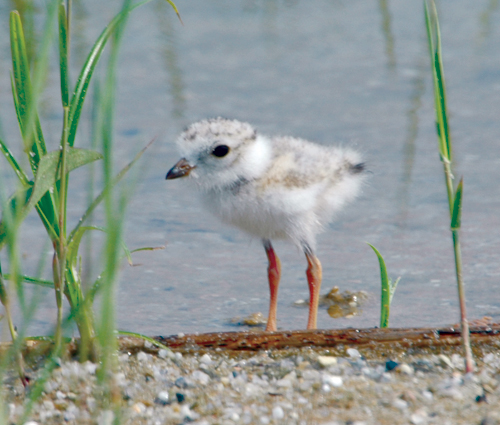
Piping plover at Chincoteague National Wildlife (VA)

Piping plover on the beach at Chincoteague National Wildlife Refuge, located at the southern end of Assateague Island, Virginia.